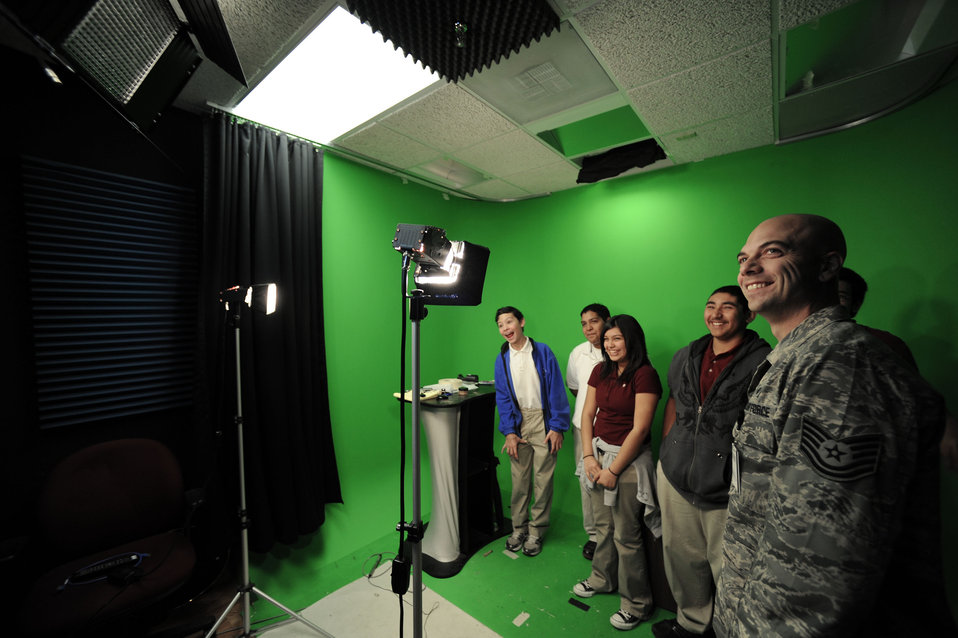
Middle school students tour Defense Media Activity-San Antonio

Tech. Sgt. Chris Decker gave students an opportunity to record themselves in the